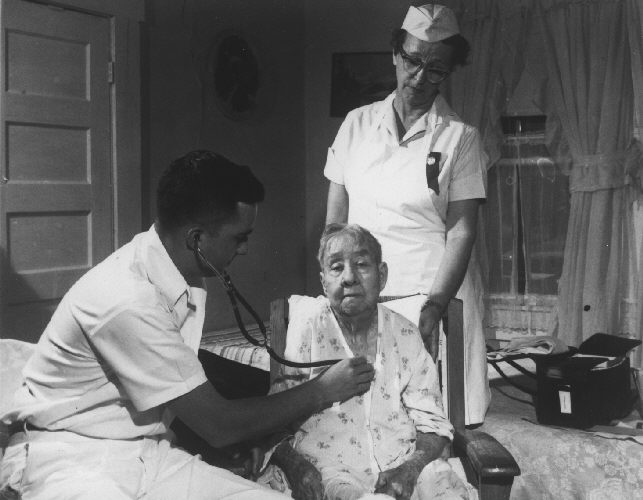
In-home examinations.